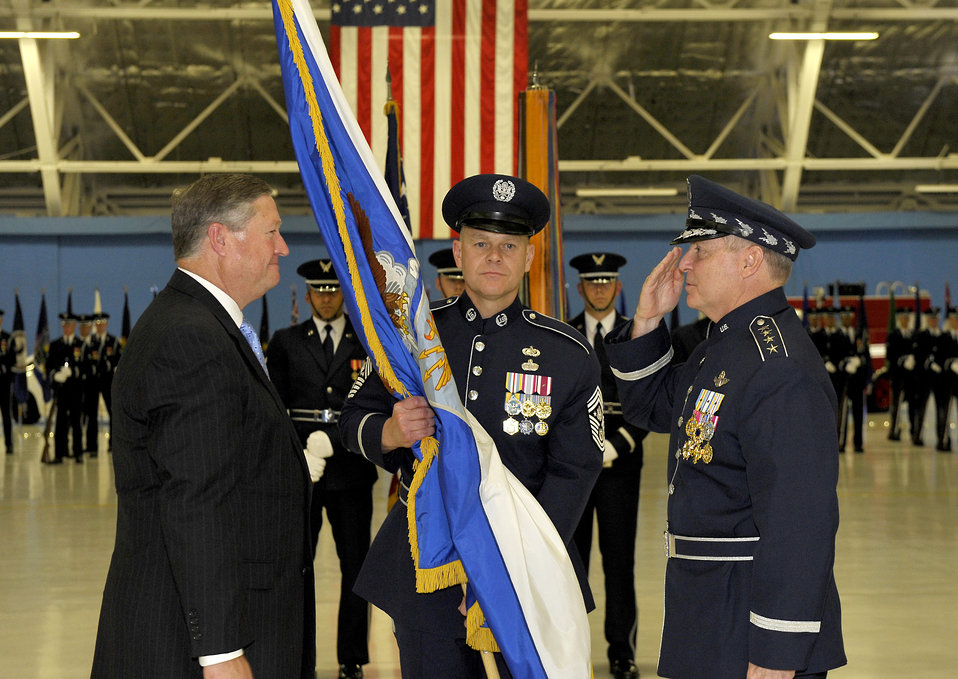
Welsh ‘humbled’ to serve as Air Force chief of staff

Secretary of the Air Force Michael Donley passes the chief of staff flag to Gen. Mark A. Welsh III during a ceremony at Joint Base Andrews, Md., Aug. 10, 2012. Prior to his new position, Welsh was the commander of U. S. Air Forces in Europe.